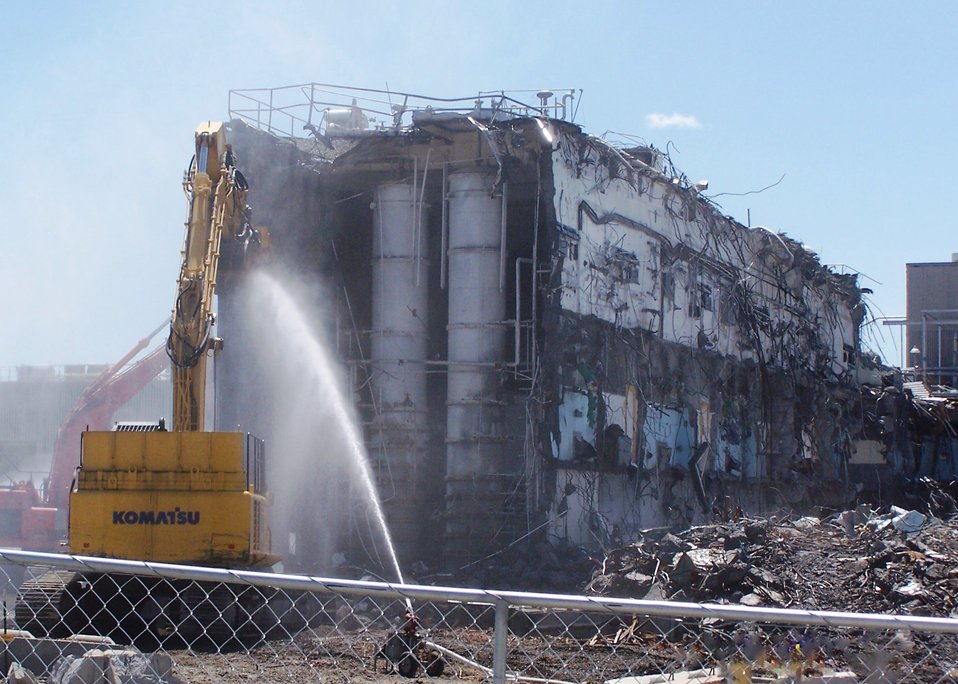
224-U demolition

Workers demolish the 224-U facility, one of five ancillary facilities adjacent to Hanford’s U Plant.